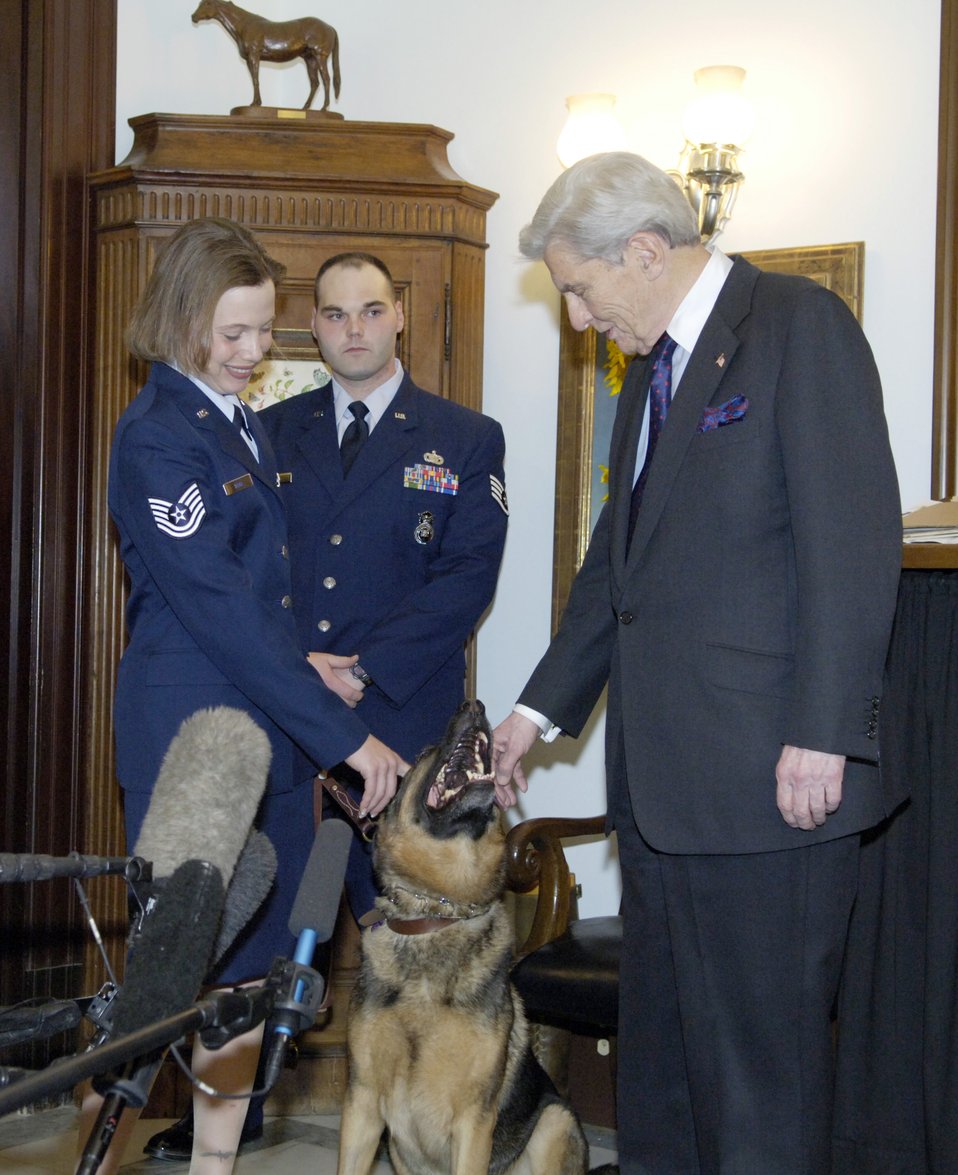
Rex the dog comes to DC

WASHINGTON (AFPN) -- Sen. John Warner, chairman of the Senate Armed Services Committee, meets Rex, a retired military working dog, Tech. Sgt. Jamie Dana, Rex's handler, and Staff Sgt. Michael Dana Jan. 31. Senator Warner was instrumental in pushing through legislation which allowed Sergeant Jamie Dana to adopt Rex following their recovery from injuries they sustained while deployed to Iraq as a military working dog team. Sergeant Jamie Dana, her husband and Rex visited Capitol Hill to thank the members of Congress and Air Force leaders who helped her adopt Rex and to attend President Bush's State of the Union address. The Airmen are both security forces specialists from Peterson Air Force Base, Colo.